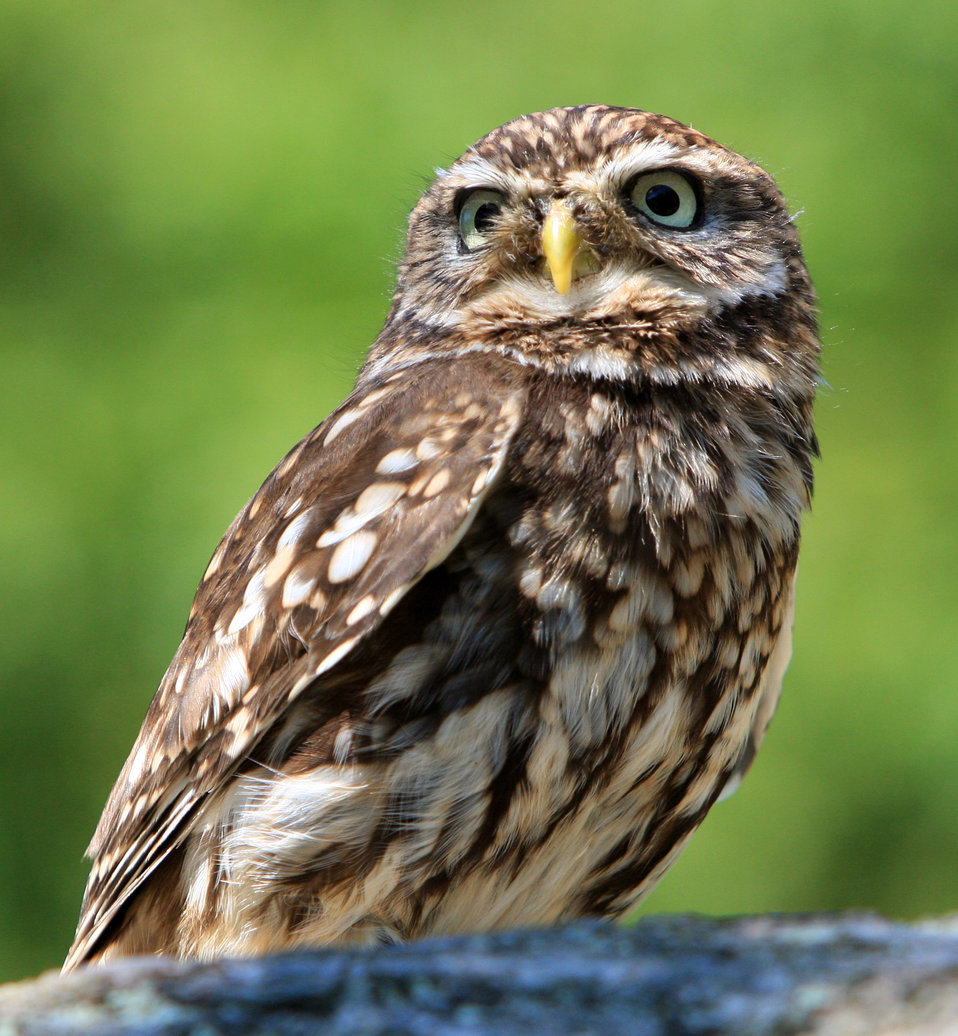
Little owl portrait

Close-up portrait of a little owl.